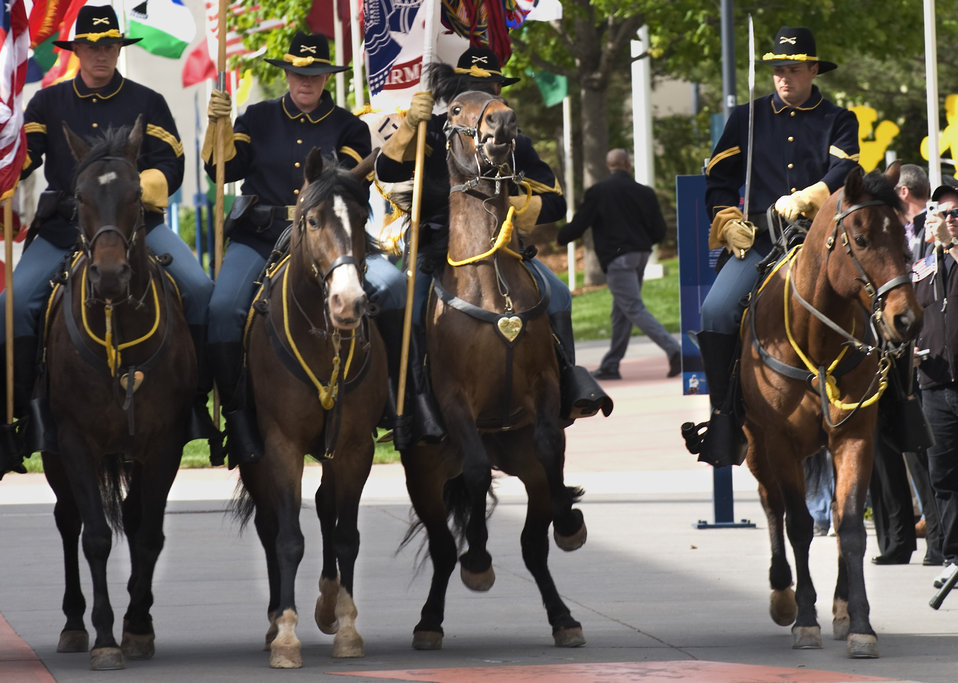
Ceremonies kick off 2011 Warrior Games

Members of the Ft. Carson Mounted Color Guard travel down the Olympic Pathway May 16, 2011, during the 2011 Warrior Games opening ceremony. In its second year, the event is being held at the U.S. Olympic Training Center in Colorado Springs, Colo.